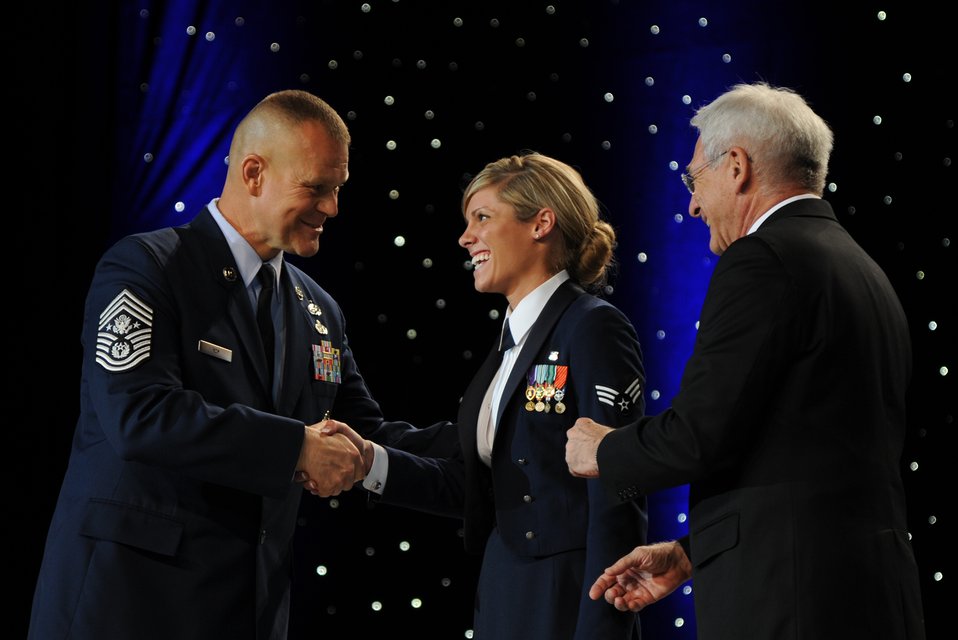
12 Outstanding Airmen of the Year

Senior Airman Bryenna Brooks is congratulated by Chief Master Sgt. of the Air Force James A. Roy during the 12 Outstanding Airmen of the Year banquet at the 2012 Air Force Association’s Air and Space Conference and Technology Exposition in Washington, D.C., Sept. 17, 2012. The recipients were recognized for superior leadership, job performance, community involvement and personal achievements. Brooks is with the 2nd Medical Operation Squadron at Barksdale Air Force Base, La.